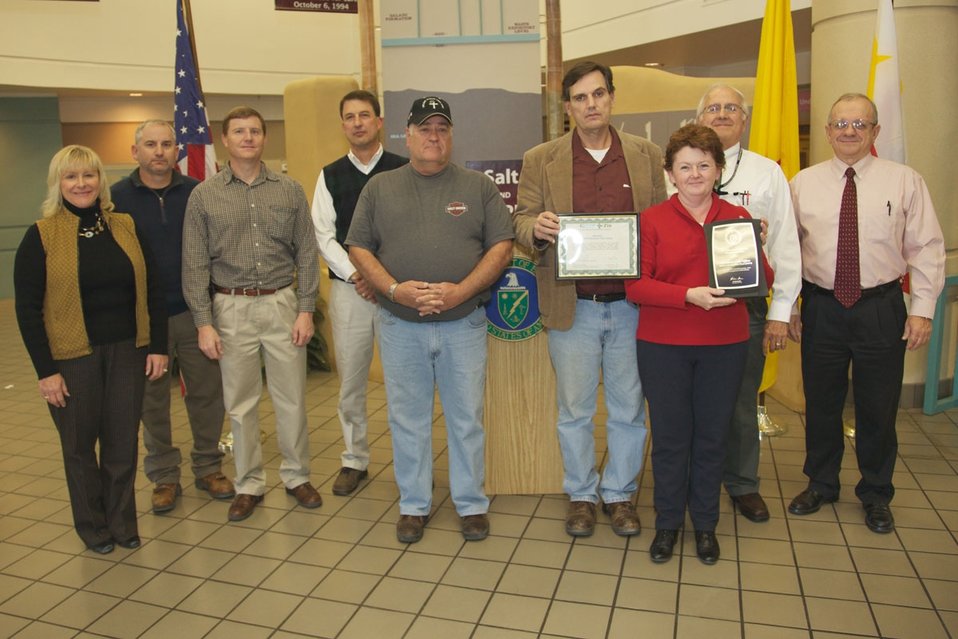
2011 DOE Sustainability Award

CBFO Interim Manager Ed Ziemianski (far right) presented the New Mexico Environment Department’s Bronze Award under their Green Zia Environmental Leadership Program and the 2011 DOE Sustainability Award to several recipients. Shown from left to right are Debra Hicks and Randy Pettigrew of Pettigrew & Associates; Owen Lofton of the Bureau of Land Management; Hank Carey and Ronnie Crockett of URS Washington TRU Solutions; Dan Ferguson of CBFO and Judy McLemore and Bob Kehrman of Regulatory and Environmental Services.